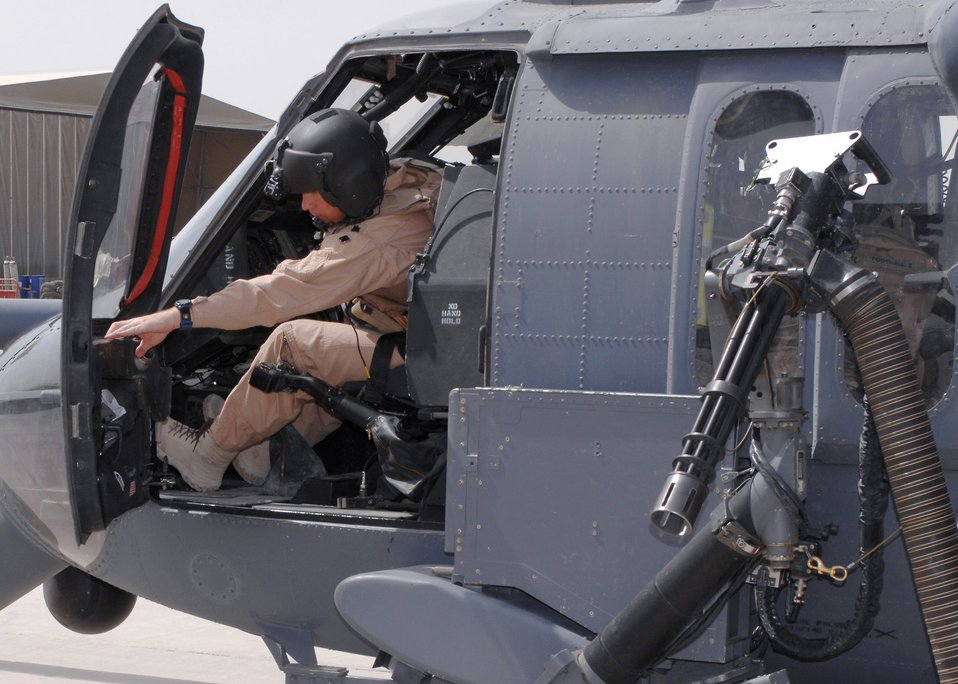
305th ERQS outside the box

Lt. Col. John Phalon, a 305th Expeditionary Rescue Squadron HH-60G Pave Hawk co-pilot, prepares to fly a mission from Kandahar Air Field, Afghanistan, during a alert call March 31. Colonel Phalon is deployed from the 305th Rescue Squadron at Davis Monthan Air Force Base, Ariz.